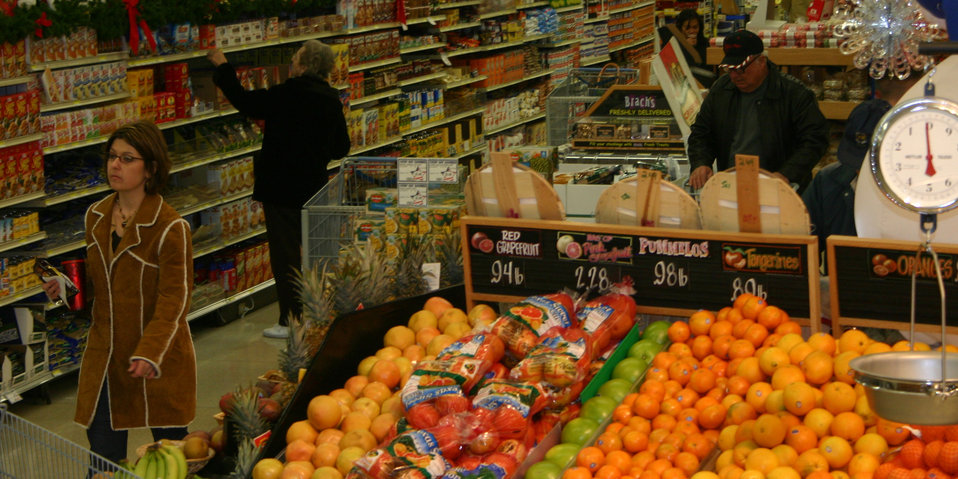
Commissaries ring up increased savings

Shoppers can lessen the financial pinch by purchasing their goods at a commissary. According to Defense Commissary Agency officials, consumers can save more than 30 percent by shopping at a base commissary instead of going to off-base merchants.